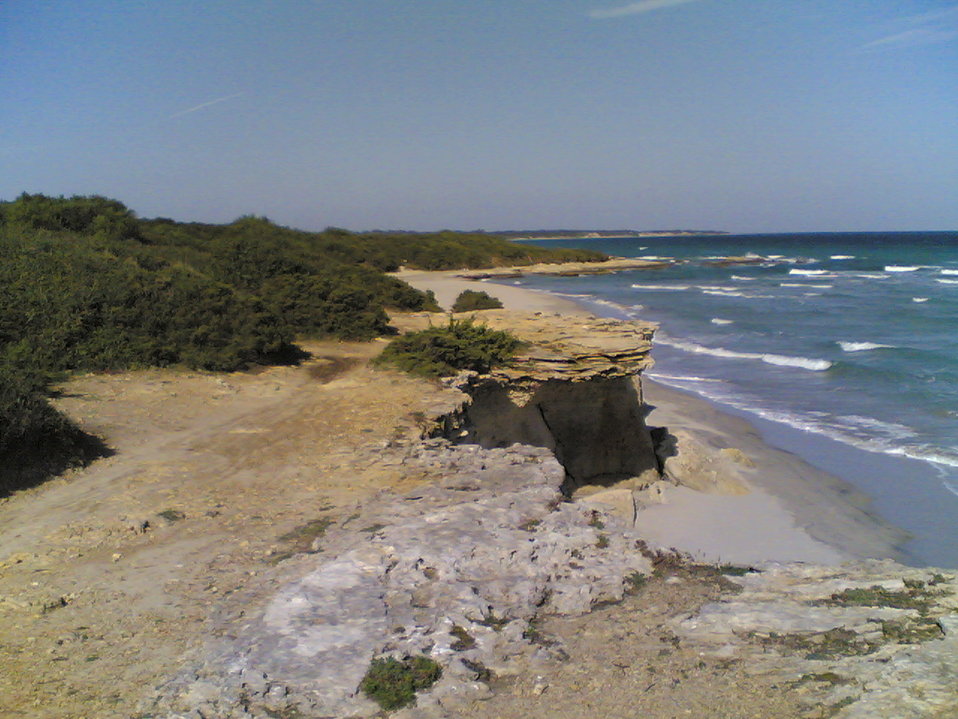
Italiano: Foto del 3 novembre 2007 - Baia dei Turchi, lato nord